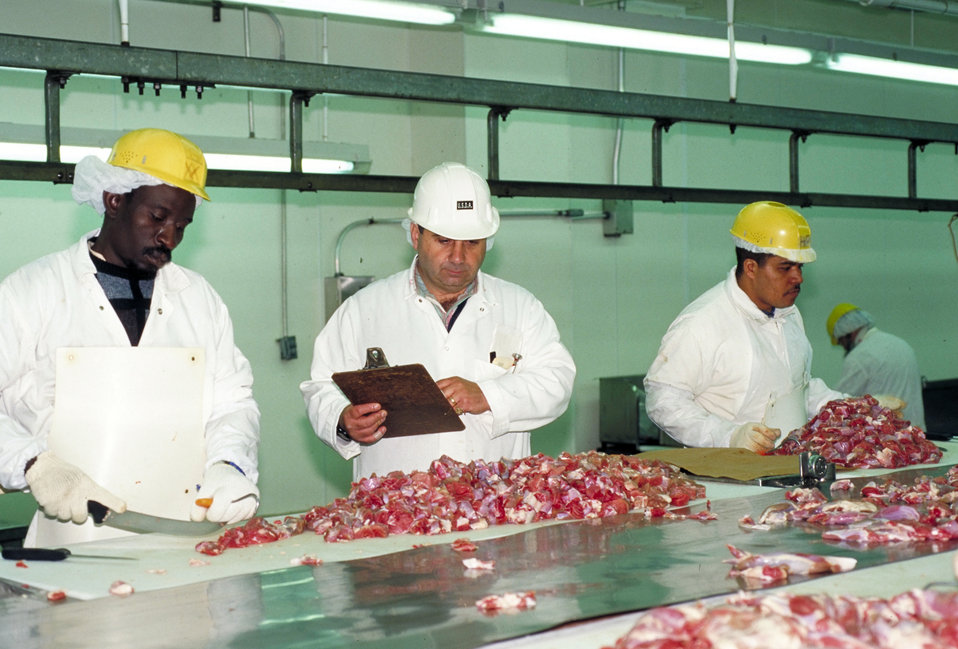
U.S. Department of Agriculture’s (USDA) Food Safety Inspection Service (FSIS) inspector does a visual examination of a beef for foreign material at a meat processing plant in Brooklyn, NY on June 15, 1995.